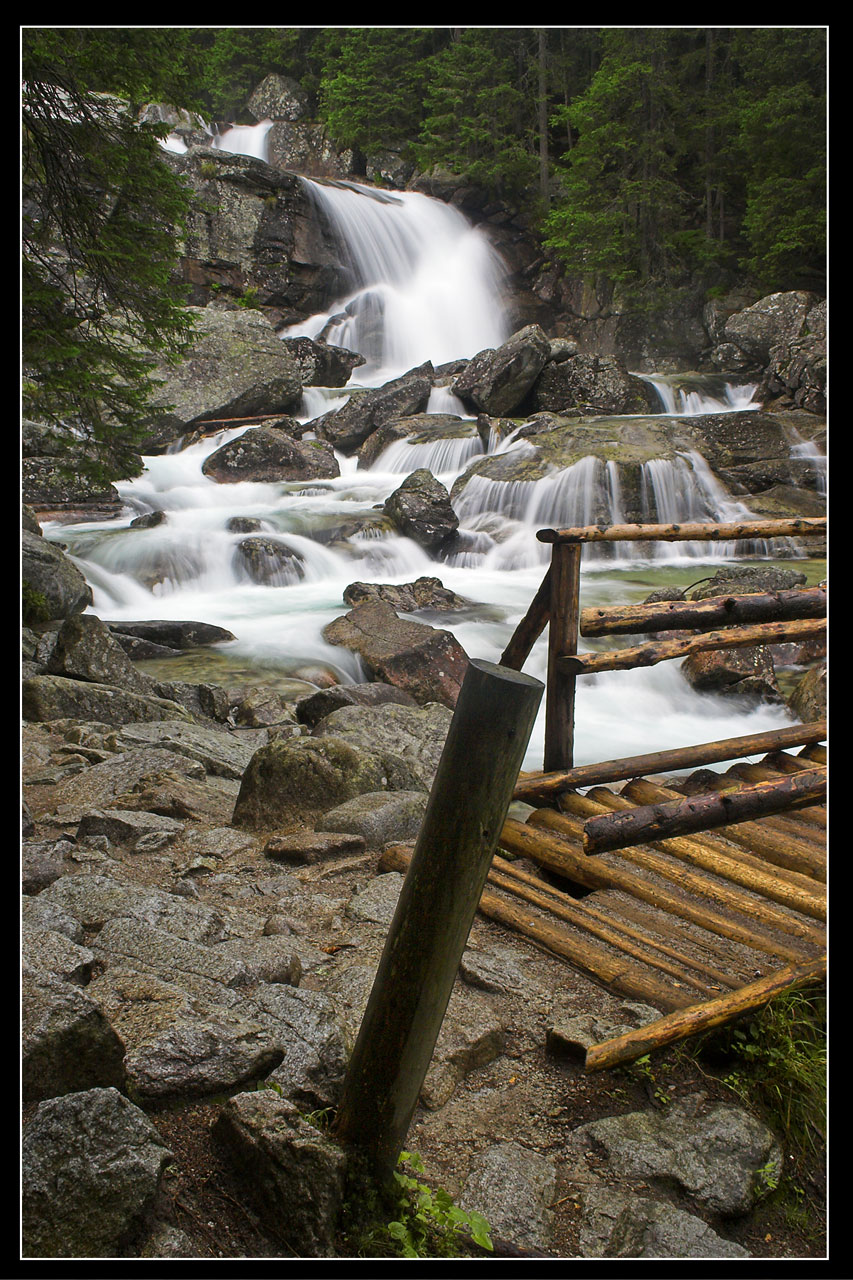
Stream in high tatras in slovakia.